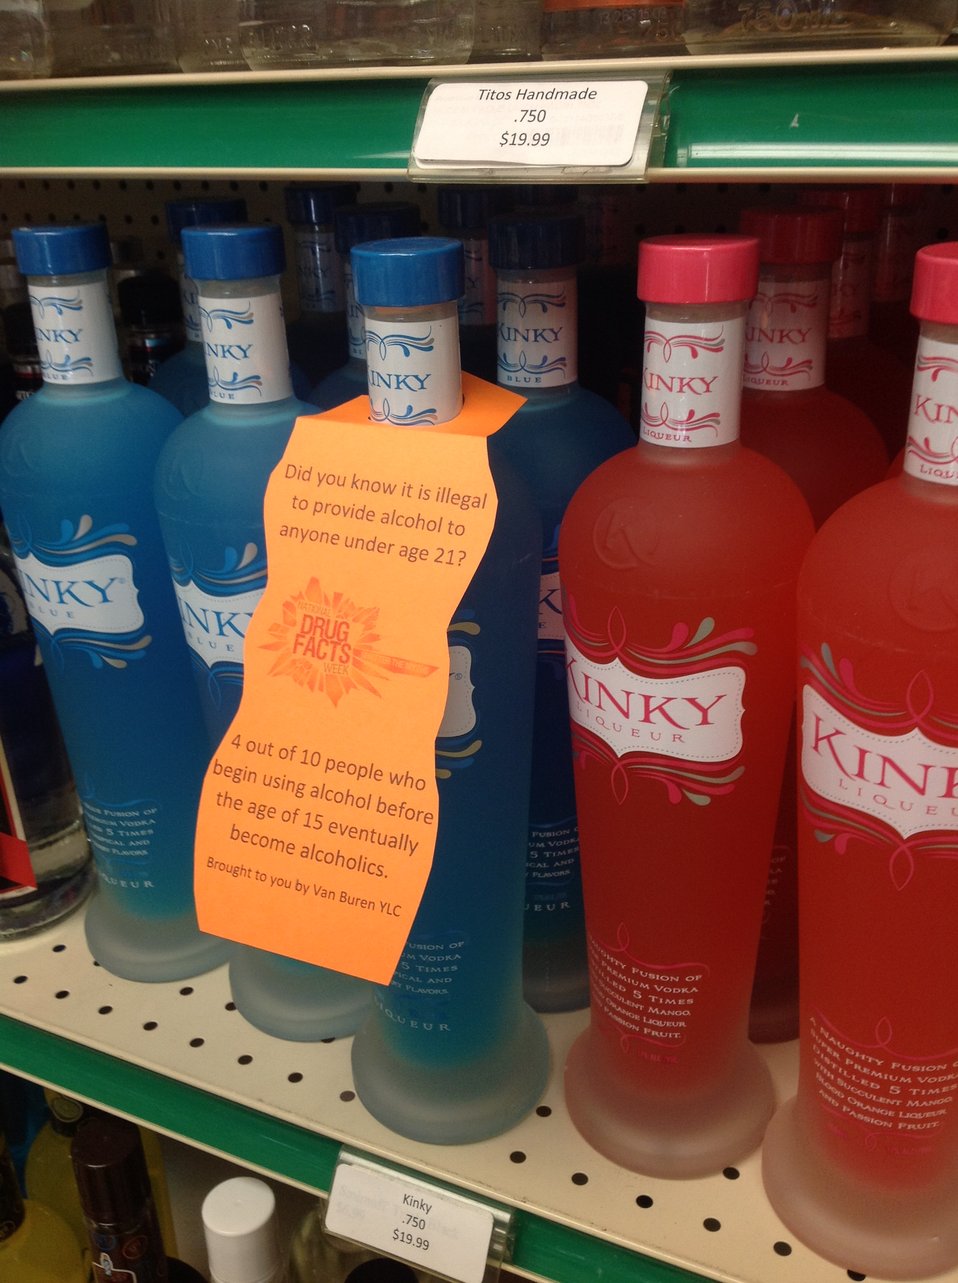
Getting the Word Out

Teenagers from the Van Buren County SAFE Coalition's, Youth Leadership Council (YLC) in Keosauqua, Iowa participate in various events during National Drug Facts Week, 2014.